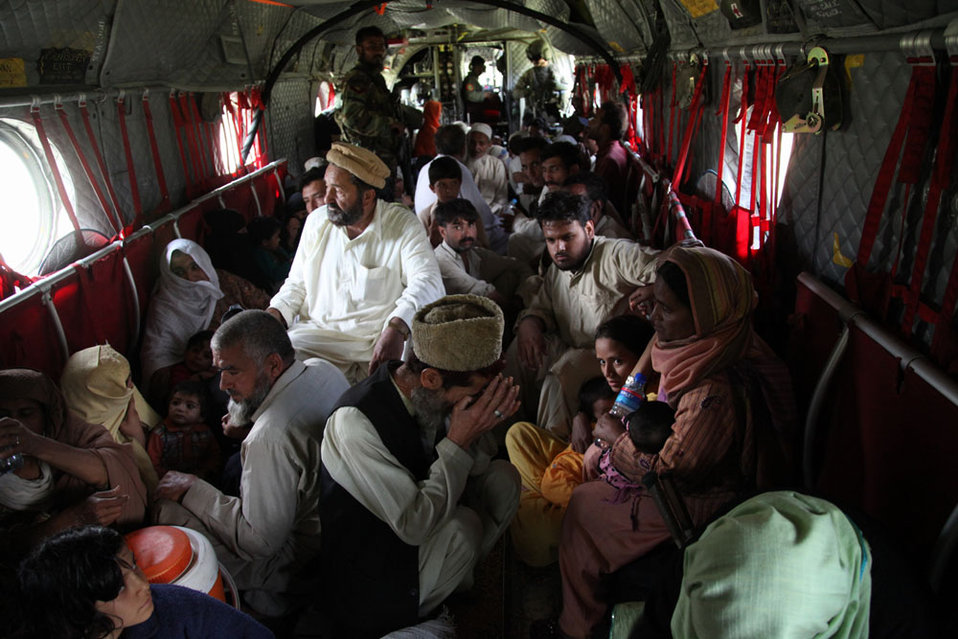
Pakistani victims of the flooding are seated on the floor of a U.S. Army (CH-47) helicopter during the evacuation of civilians, as part of the disaster relief effort to help the flood victims from the town of Khyber, Khyber Pakhtunkhwa Province (formerly North West Frontier Province), Pakistan, on August 5, 2010.